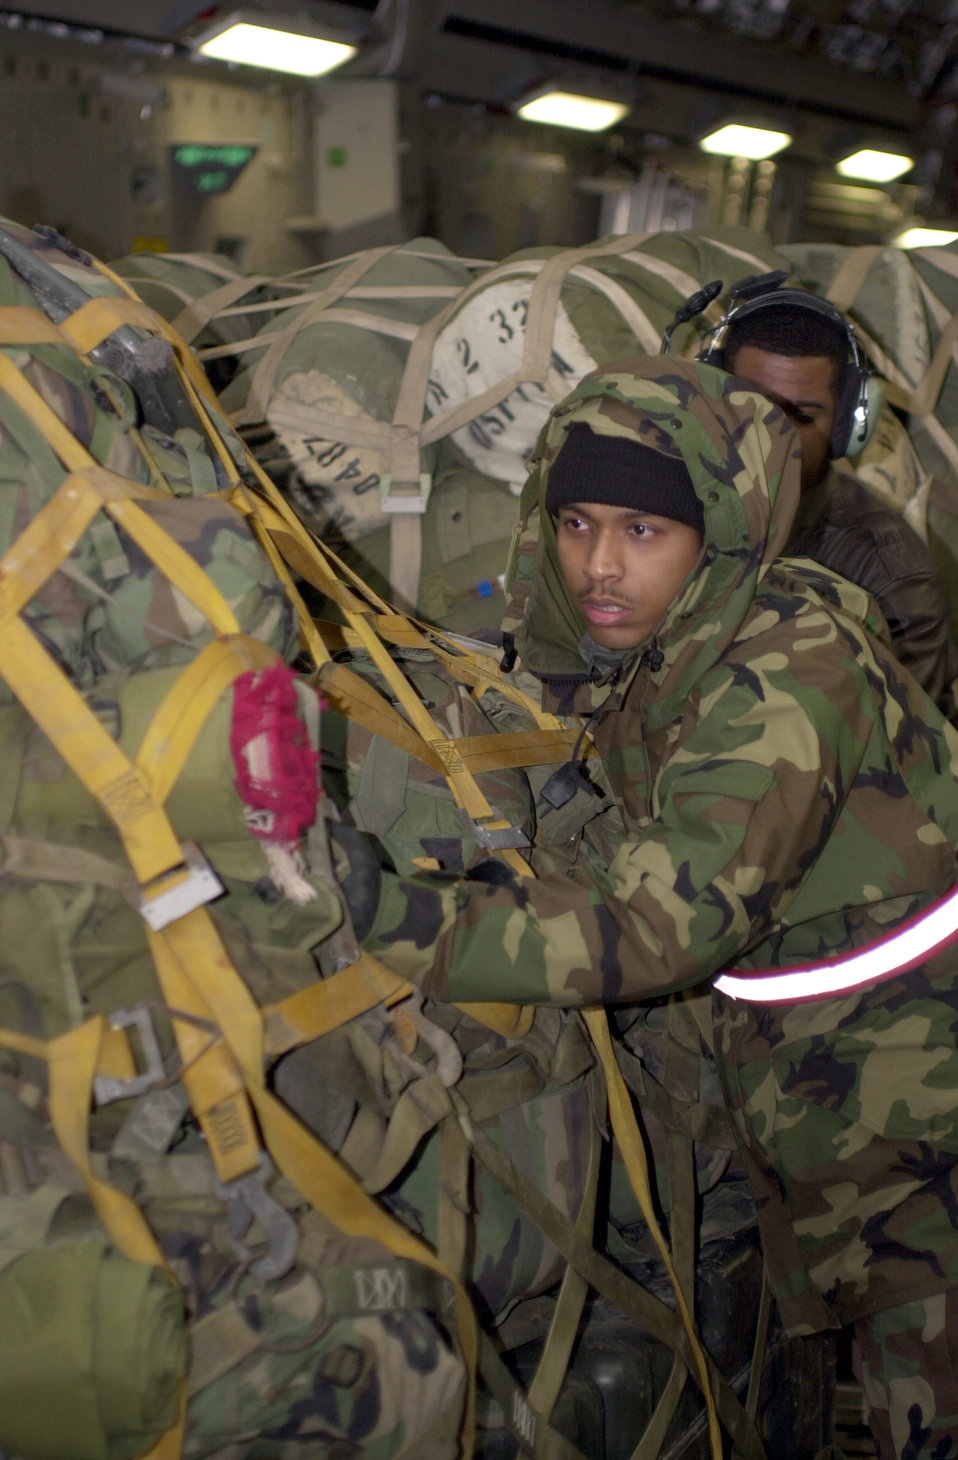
Offloading pallets

INCIRLIK AIR BASE, Turkey -- Staff Sgt. Nolan Jones pushes pallets off a C-17 Globemaster III here. Sergeant Jones is assigned to the 728th Air Mobility Squadron's aircraft services team.